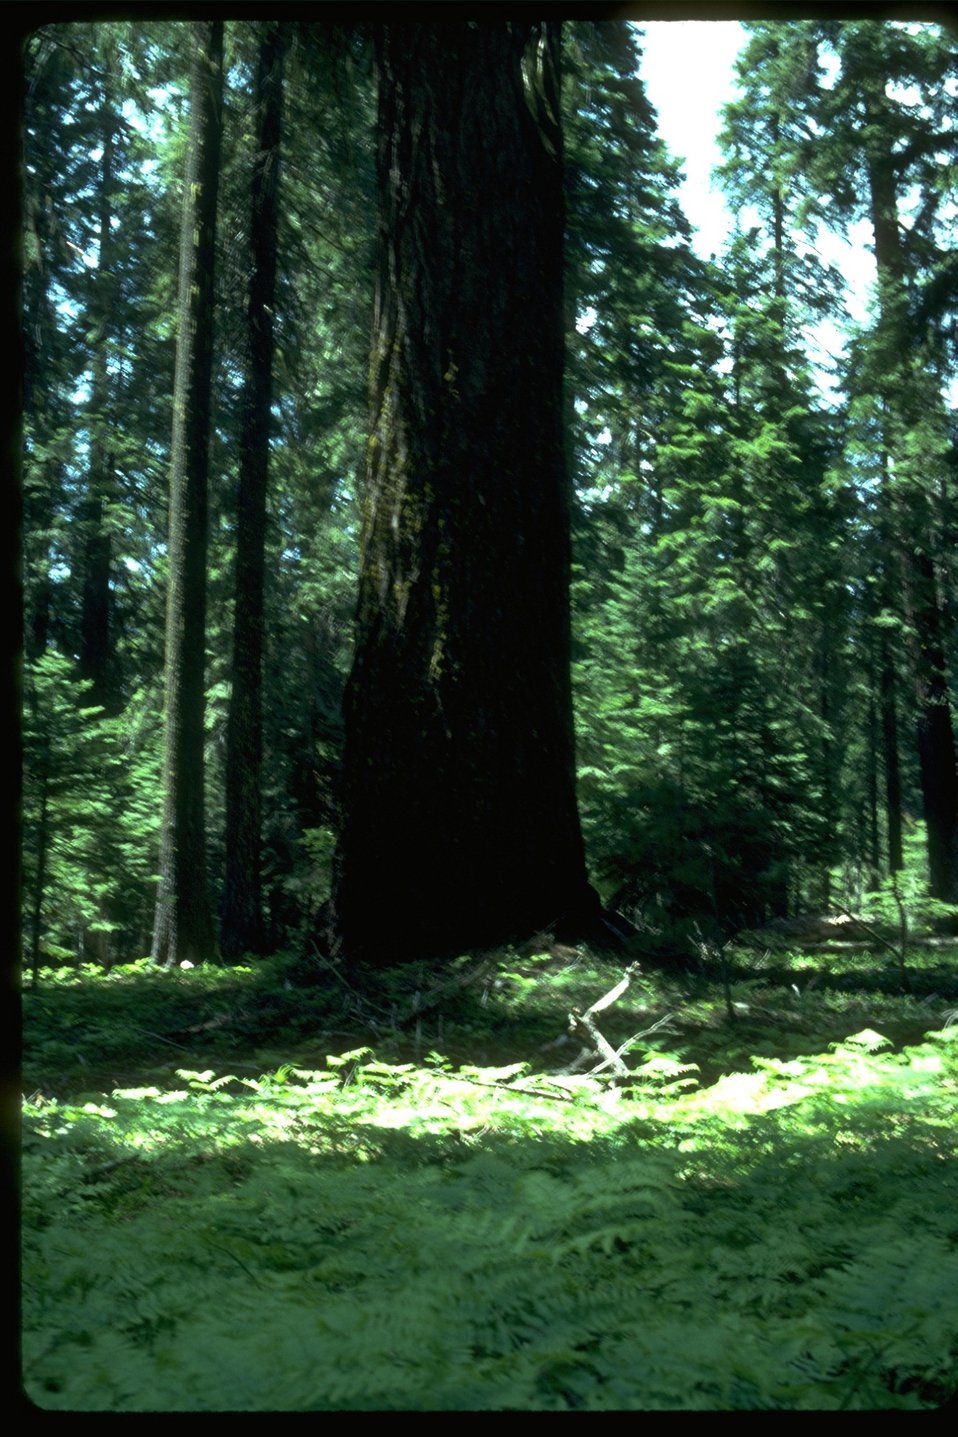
Old Growth Fir at Surveyor Campground.